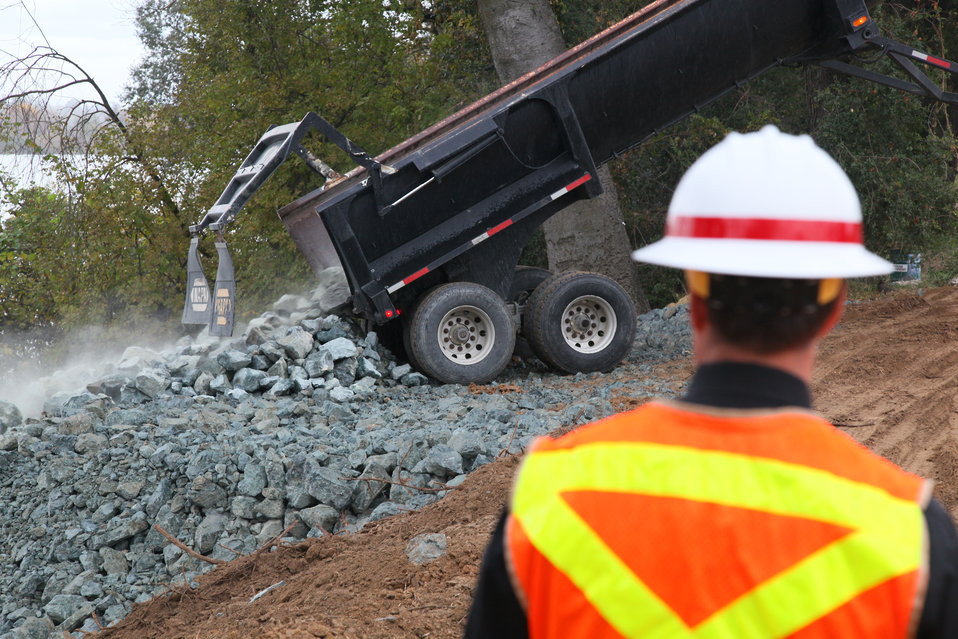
Large rock called rip-rap is delivered

U.S. Army Corps of Engineers Sacramento District project manager Dave Cook watches as large rock called rip-rap is delivered to an erosion repair site along the American River’s south bank near Watt Avenue in Sacramento, Calif., Nov. 18, 2011. Cook is overseeing repairs of two nearby critical erosion sites between November 2011 and July 2012. The work is part of the Sacramento River Bank Protection Project to reduce flood risk for the Central Valley. (U.S. Army photo by Michael J. Nevins/Released) bit.ly/uW9iKS